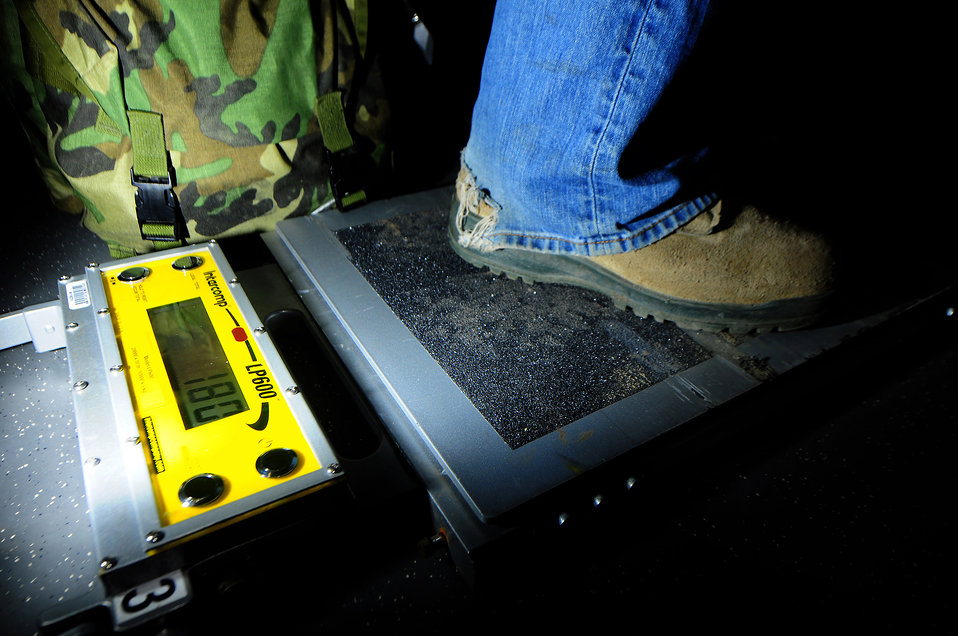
Airmen Support Joint Task Force Odyssey Dawn

A U.S. Air Force Airman weighs in while processing for deployment preparation for a deployment in support of Joint Task Force Odyssey Dawn, Ramstein Air Base, Germany, March 21, 2011. The U.S. Africa Command task force was established to provide operational and tactical command and control of U.S. military forces supporting the international response to the unrest in Libya and enforcement of United Nations Security council Resolution 1973. UNSCR 1873 authorizes all necessary measures to protect civilians in Libya under threat of attack by Qadhafi regime forces. JTF Odyssey Dawn is commanded by U.S. Navy Admiral Samuel J. Locklear, III.